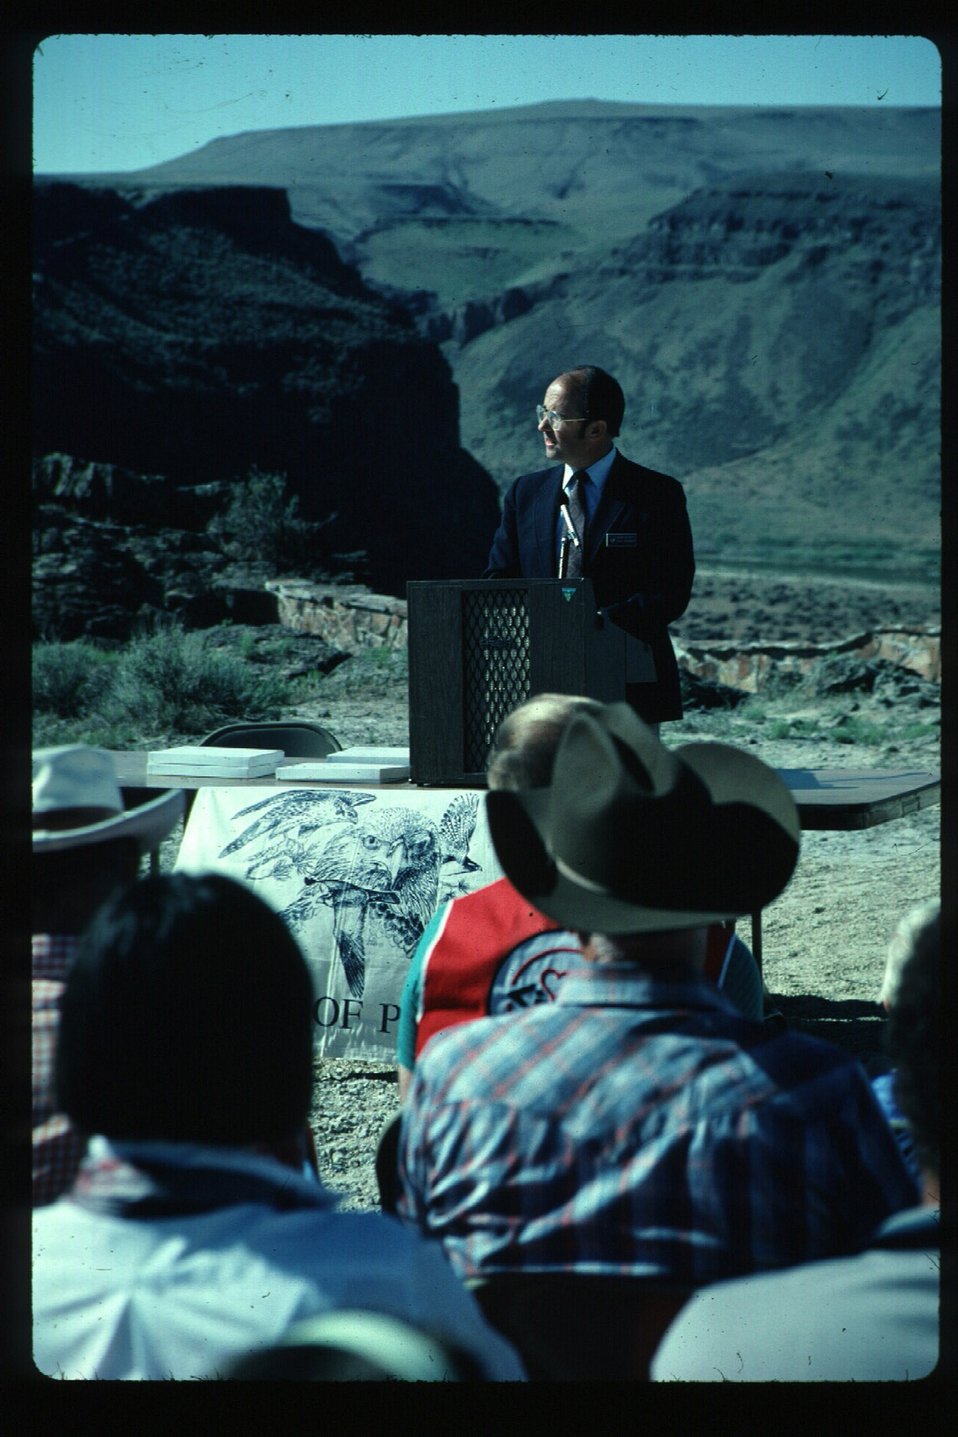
District Manager at Dedication Point Cermony Birds of Prey National Conservation Area BOP NCA Owyhee Field Office LSRD Lower Snake River District